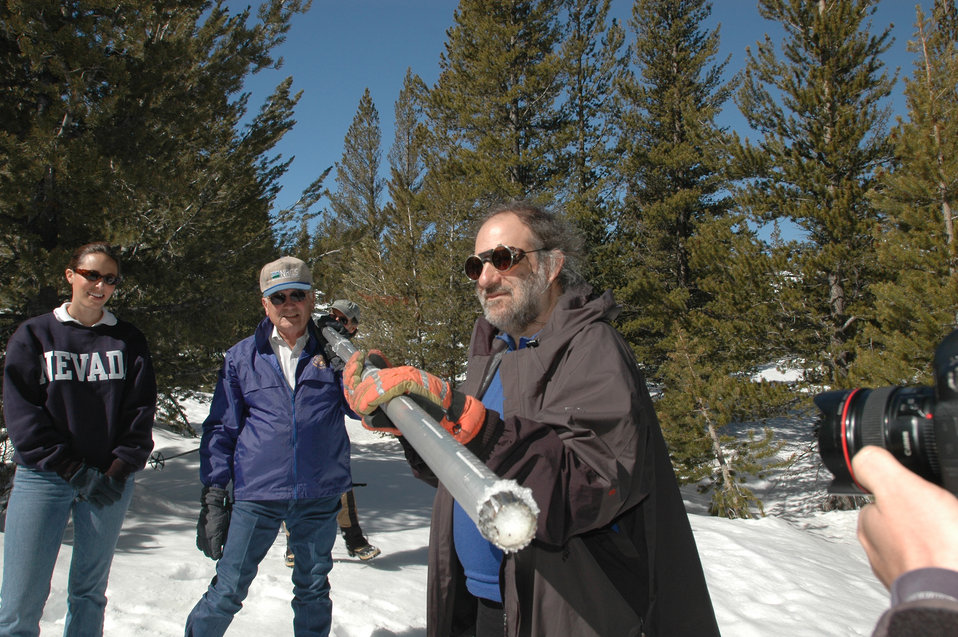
Scientists from the Federal, State, and private cooperative snow survey program directed by the U.S. Department of Agriculture's (USDA) Natural Resources Conservation Service (NRCS) sample the snow pack in Nevada on May 2, 2006. Snow plays a vital role in the lives of the citizens who live in the Western U.S. as a primary source of the water supply. The West's high mountain ranges hold a vast snowpack that provides 50 to 80 percent of the year's water supply and nature cannot be relied upon to provide an uninterrupted, dependable supply of meltwater to meet all the downstream requirements. The successful management of the West’s water supply begins with knowledge of the primary source of water in the West: snow.